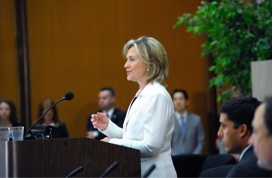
Secretary Clinton Delivers Remarks at Pride Month Celebration Event

U.S. Secretary of State Hillary Rodham Clinton delivers remarks at an event celebrating LGBT Pride Month at the U.S. Department of State in Washington, D.C., on June 22, 2010.